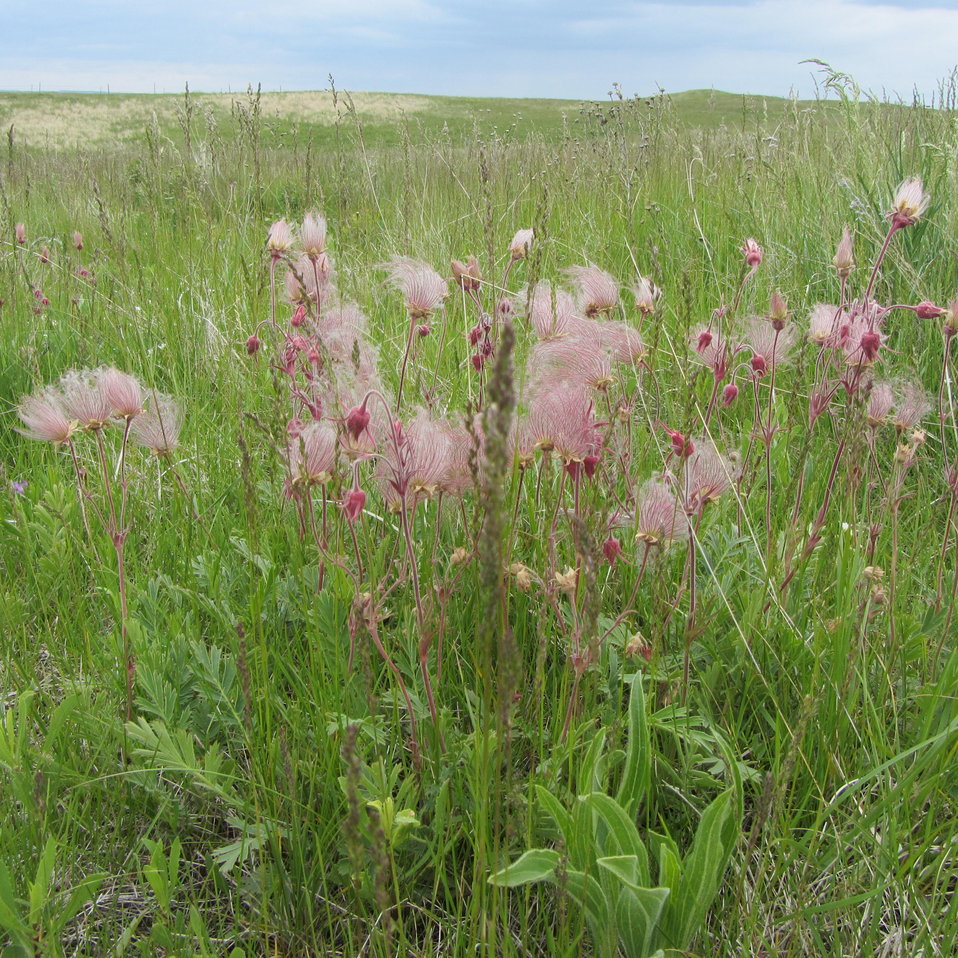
Prairie wildflowers

Prairie smoke wildflower, which grows on Lake Ilo, McLean and Lake Nettie National Wildlife Refuges, North Dakota.